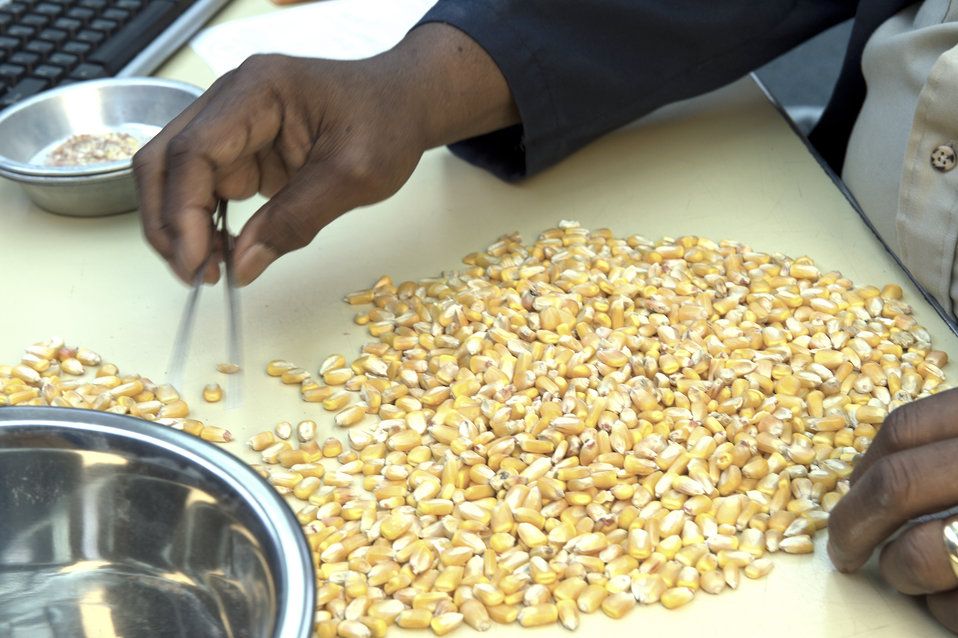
A U.S. Department of Agriculture (USDA) Grain Inspection, Packers and Stockyards Administration (GIPSA) Federal Grain Inspection Service (FGIS) scientist tests corn at the FGIS inspection laboratory in New Orleans, LA on Monday, Nov. 18, 2013.